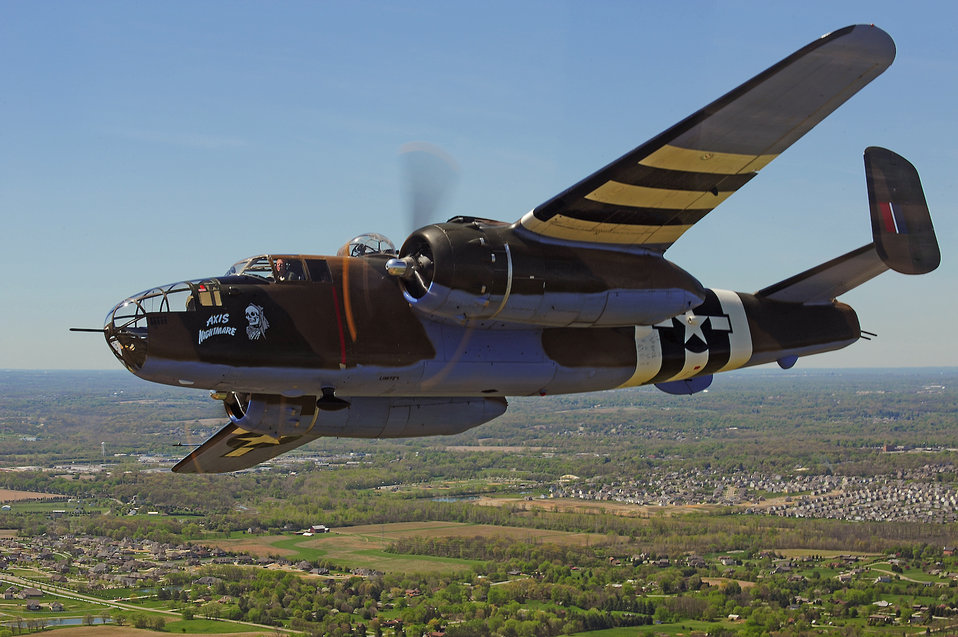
68th Doolittle Raiders Reunion

A vintage B-25 Mitchell bomber flies near the National Museum of the U.S. Air Force at Wright-Patterson Air Force Base, Ohio, during a memorial flight honoring the Doolittle Tokyo Raiders on April 18, 2010. The 68th Doolittle Raiders? reunion commemorates the anniversary of the Doolittle Tokyo Raid. On April 18, 1942, U.S. Army Air Forces Lt. Col. Jimmy Doolittle?s squad of 16 B-25 Mitchell aircraft bombed Japanese targets in response to the attack on Pearl Harbor.